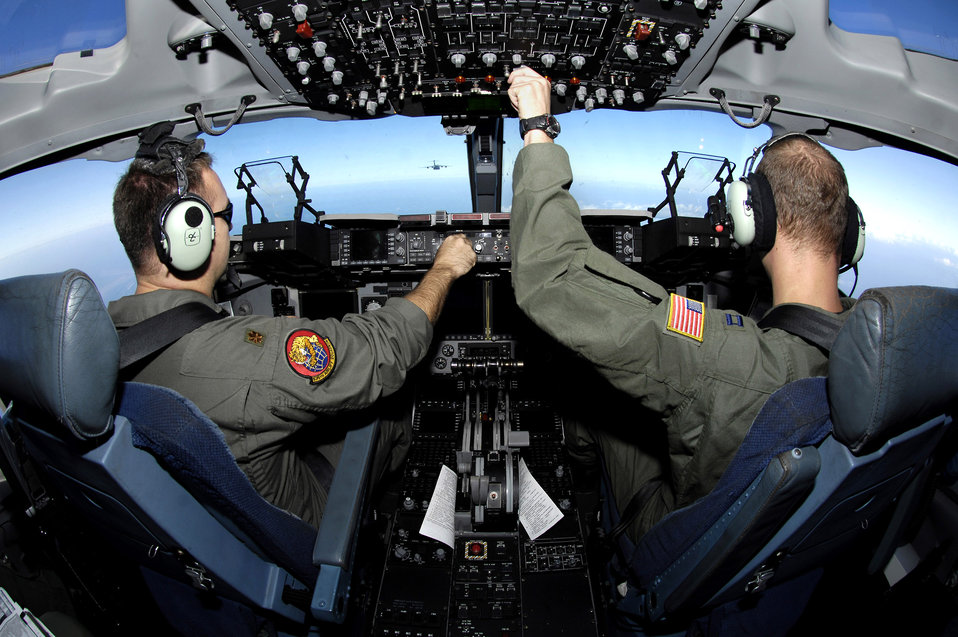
Hickam's C-17s deliver anywhere

Maj. Pete Axtell and Capt. Mark Fischer fly in a C-17 Globemaster III two-ship formation Jan. 7 over Oahu, Hawaii. The Airmen, from the 535th Airlift Squadron, Hickam Air Force Base, Hawaii, are conducting airdrops at the Kahuku Training range as part of their currency training.